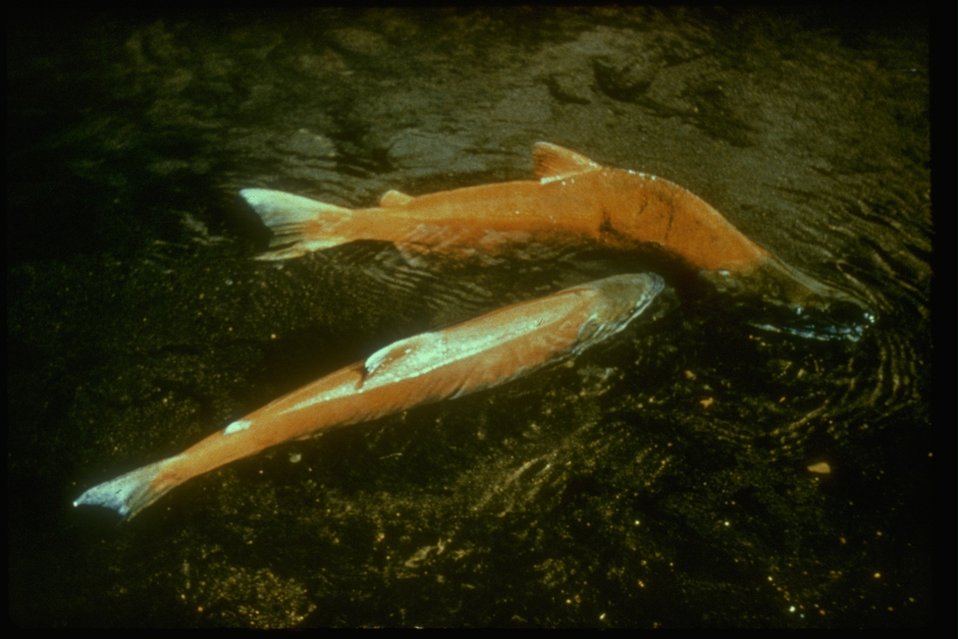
Spawning Salmon.